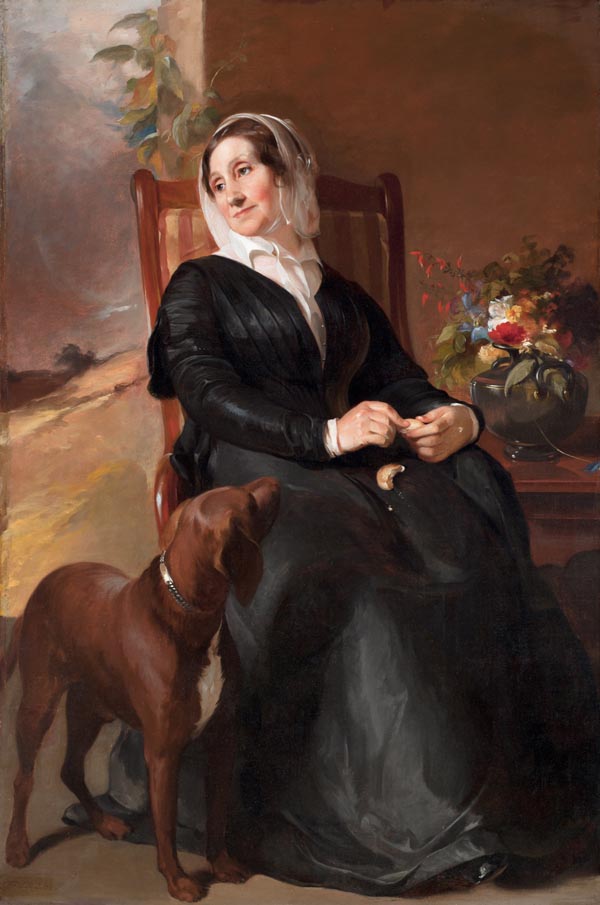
Portrait of Sarah Sully and Her Dog, Ponto, oil on canvas painting by Thomas Sully, 1848, San Antonio Museum of Art